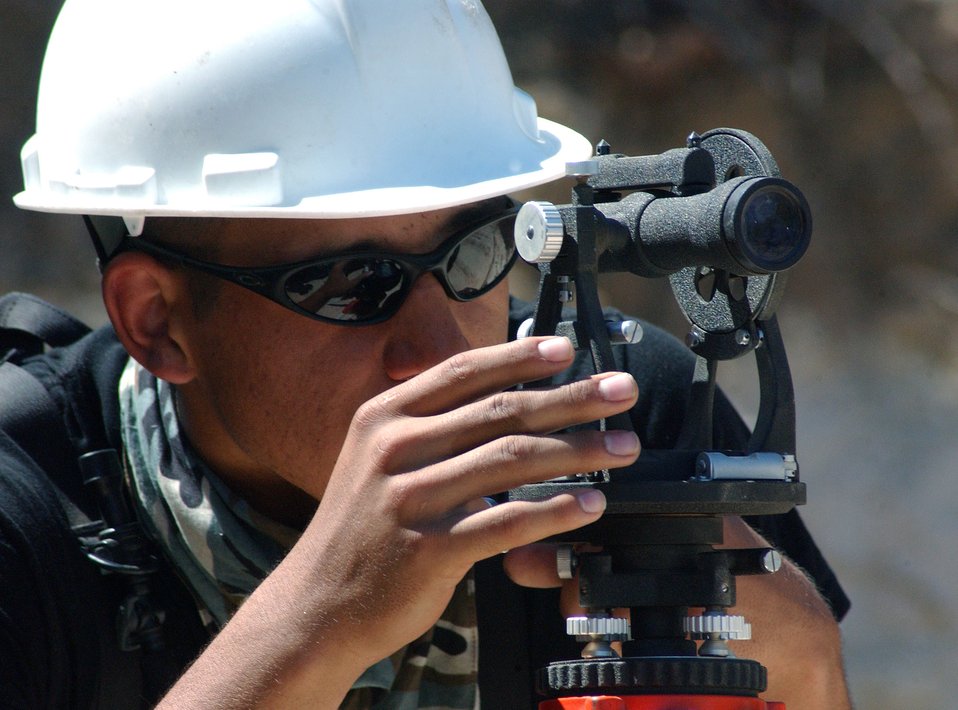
Airmen examining New Horizons

SANTA CLARA, El Salvador -- Airman 1st Class Brian Oyes surveys a site for a new clinic here during New Horizons 2005, a readiness training exercise providing humanitarian assistance to people in El Salvador. Air Force active-duty and reserve units are participating in the exercise alongside counterparts from the Army, Navy and Marines. Airman Oyes is an engineering assistant assigned to the 99th Civil Engineer Squadron at Nellis Air Force Base, Nev.